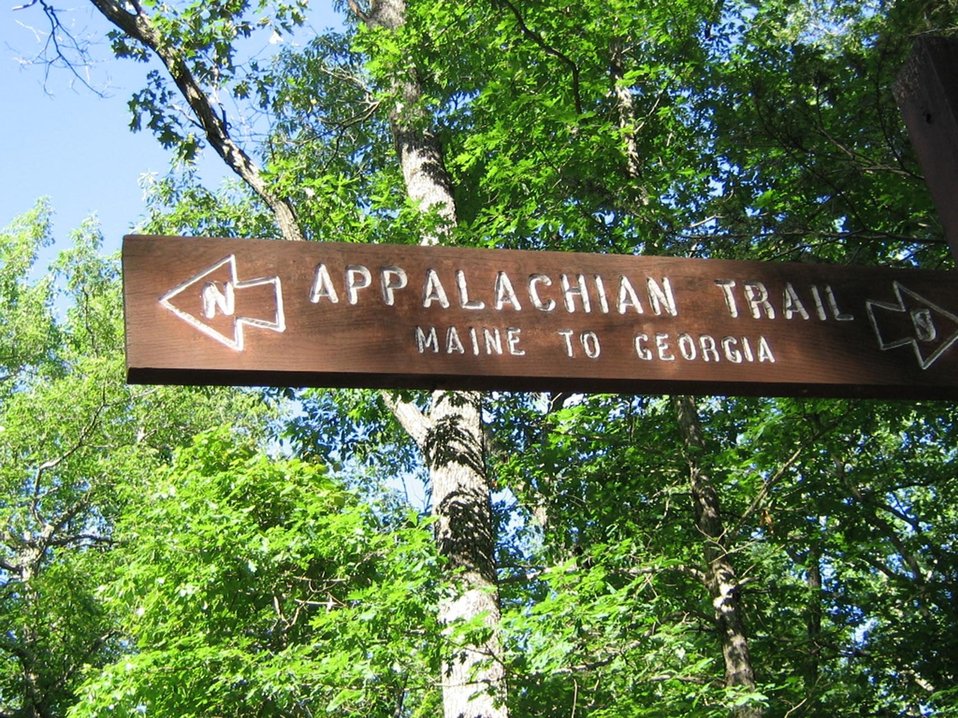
appalachian trail sign

The Appalachian National Scenic Trail stretches 2,175 miles from Mount Katahdin in Maine to Springer Mountain in Georgia. Hikers who choose to explore the entire stretch will go through 14 states and on eight national forests. Photo provided by U.S. Forest Service.